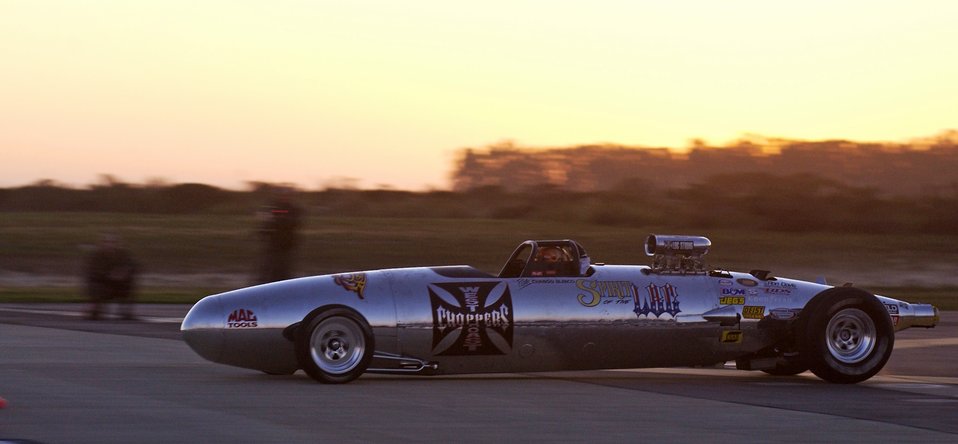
Monster Garage: Take II

VANDENBERG AIR FORCE BASE, Calif. -- The Belly Tank Lakester, piloted by Jesse James of the TV show